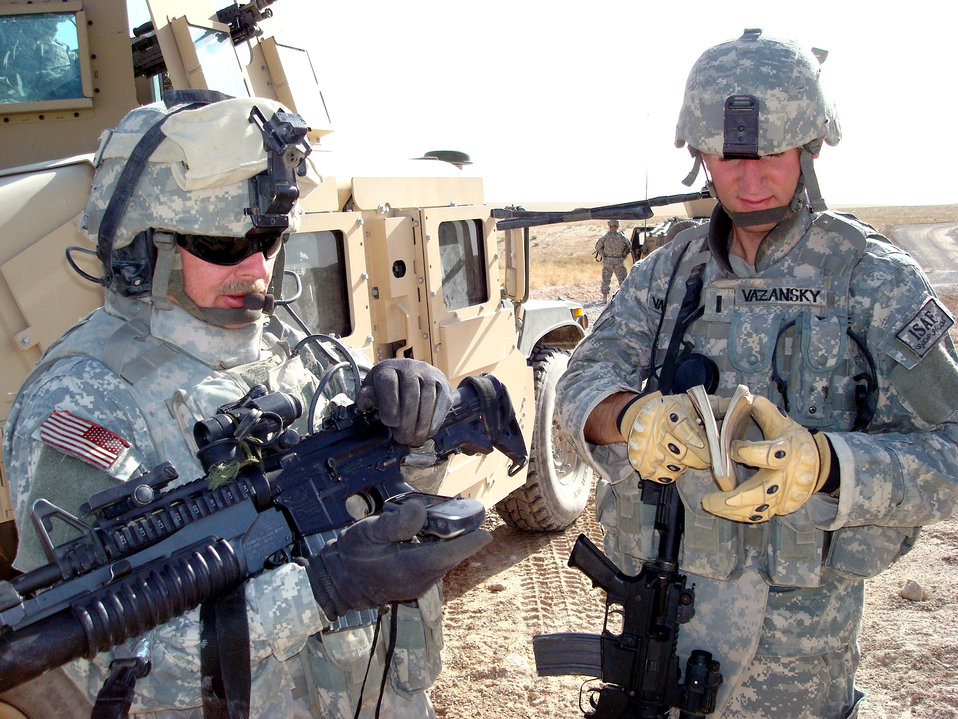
Road assessment

Master Sgt. Paul McIndoe (left) and 1st Lt. Travis Vazansky, civil affairs engineers assigned to Provincial Reconstruction Team Qalat in Afghanistan, mark waypoints on a Global Positioning System during a road assessment Aug. 18. PRT Qalat is a joint U.S. Air Force and Army team assigned to the country's southeast province of Zabul. As part of NATO's International Security Assistance Force, PRT Qalat conducts civil-military operations designed to extend the reach and legitimacy of the Islamic Republic of Afghanistan by promoting good governance and justice; enabling an active and effective Afghan security force; and facilitating reconstruction, development and economic growth. Sergeant McIndoe is deployed from the 690th Alterations and Installation Squadron at Lackland Air Force Base, Texas, and Lieutenant Vazansky is assigned to the 341st Civil Engineer Squadron at Malmstrom AFB, Mont.